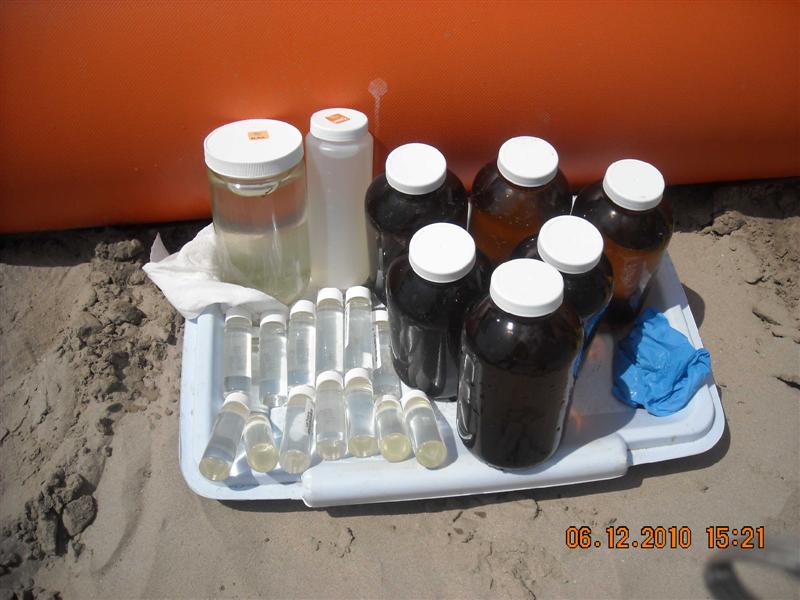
Sample jars prepared for water sampling along the Gulf coast